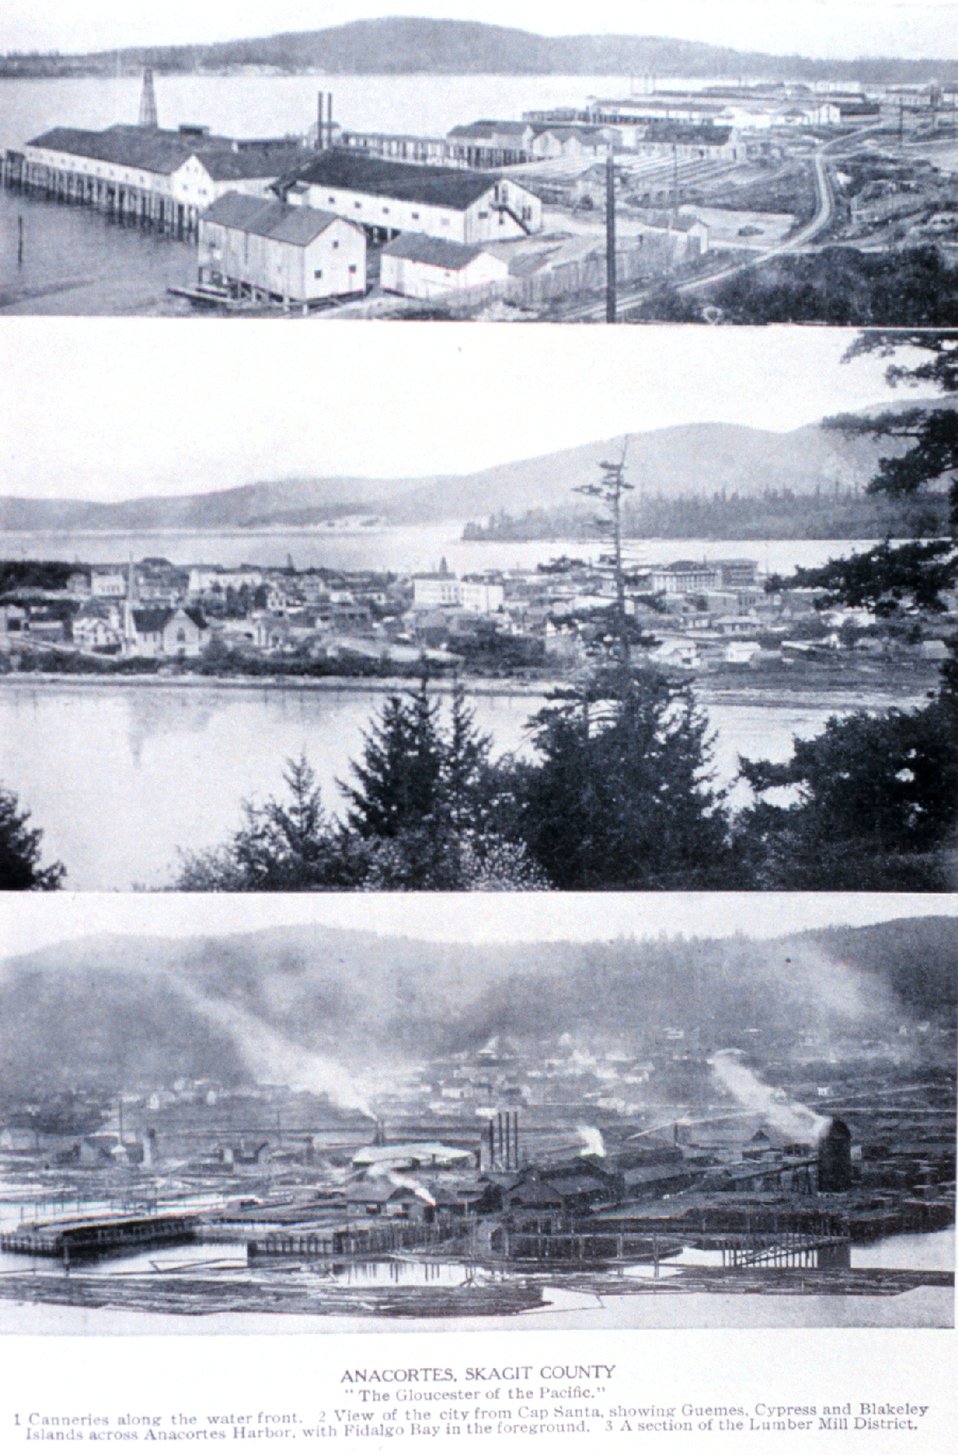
Views of 'Anacortes, Skagit County' the 'Gloucester of the Pacific'. In: 'Puget Sound and Western Washington Cities-Towns Scenery', by Robert A. Reid, Robert A. Reid Publisher, Seattle, 1912. P. 109.